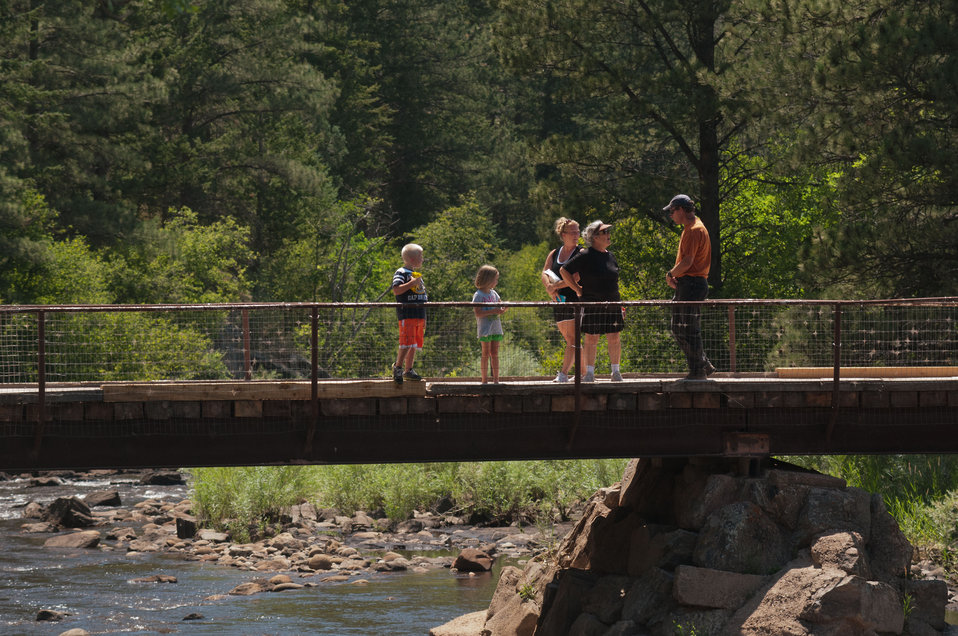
U.S. Department of Agriculture District Conservationist Todd Boldt, orange shirt, talks with Jackson, Alison and Amy Temples, and Patty Jackson, three generations of a family, walking across the bridge to see the effects of the Hewlett Gulch Fire, in the Poudre Canyon area, on Friday, July 20, 2012, near Fort Collins, Colorado. “Talking with people is one of the most important things I do. By talking with them, they will talk to maybe 50 others,“ said Todd Boldt. “Explaining the effects of the fire and the steps that the City of Greeley and USDA are doing, go a long way to educate the public.” Unmitigated runoff have turned the water in this river from clear water to nearly black water heavily laden with ash, silt, and burnt debris that recent thunderstorms have already washed down from the mountainsides. When he dug down into the riverbanks, he found ash 18 inches below the surface, at the water’s edge. At its peak more than 400 firefighters were battling fires pushed by 50 mph winds. When the last embers were cooled, more than 12-square miles lay blacked at a cost of approximately 3.2 million dollars to fight. The aerial distribution of straw has successfully kept nearby Seaman Reservoir clean for the drinking water of the City of Greeley. Forest Service lands receive straw, while private and other lands receive a seed mix and straw to promote ground cover plant growth on ash-covered lands. In total, 1,800 tons of straw will be applied during the 14-day operation. One quarter of the cost was paid by the City of Greeley and the U.S. Department of Agriculture funded the remainder.